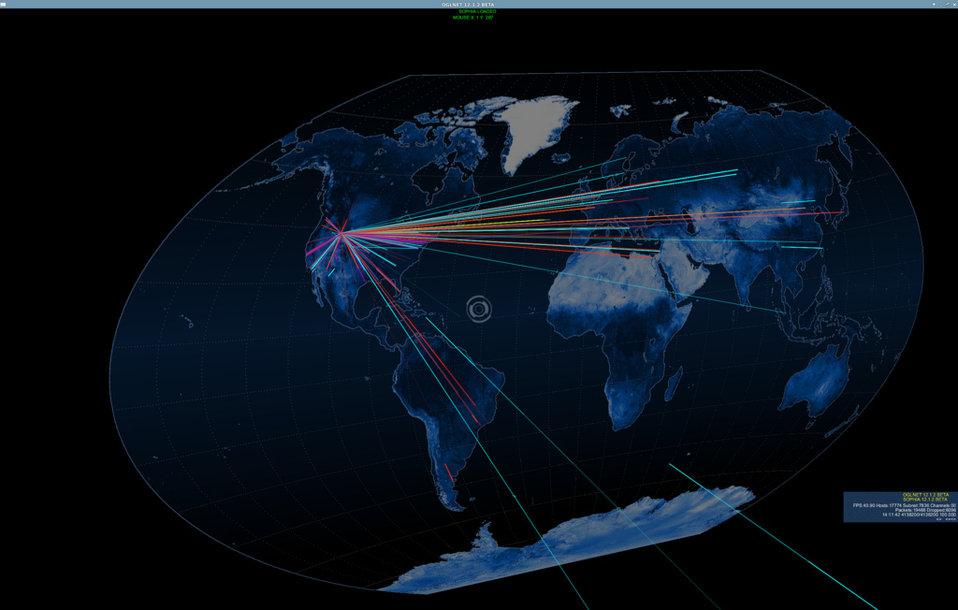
SOPHIA IS A CYBER SECURITY SOFTWARE TOOL THAT HELPS PROTECT ENERGY SECTOR NETWORKS AND CONTROL SYSTEMS.

IDAHO NATIONAL LABORATORY DEVELOPED IT AS AN EASY, ELEGANT WAY TO HELP NETWORK OPERATORS DETECT INTRUDERS AND OTHER ANOMALIES.